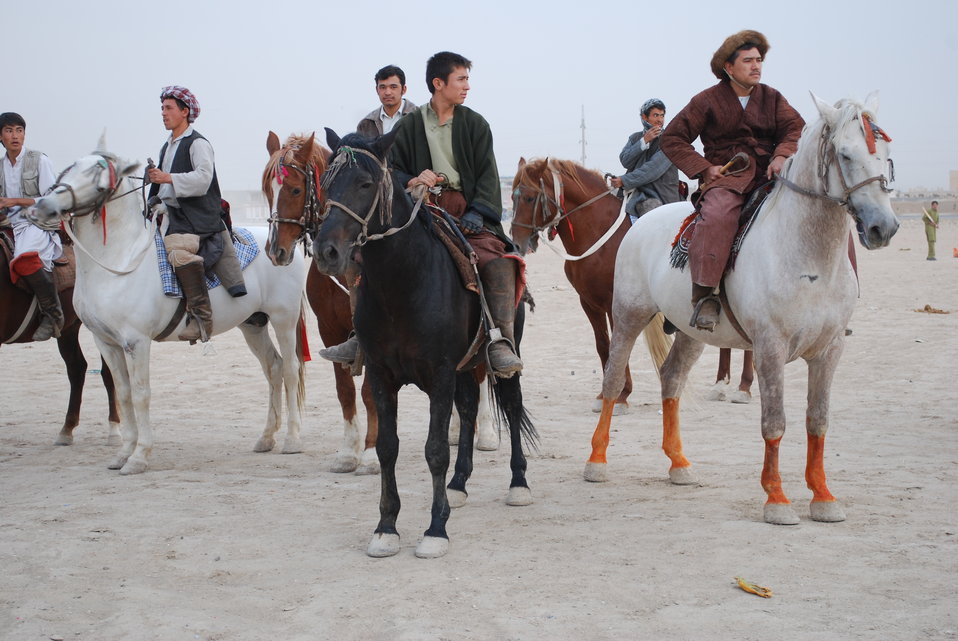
'On the Road' in Balkh Province